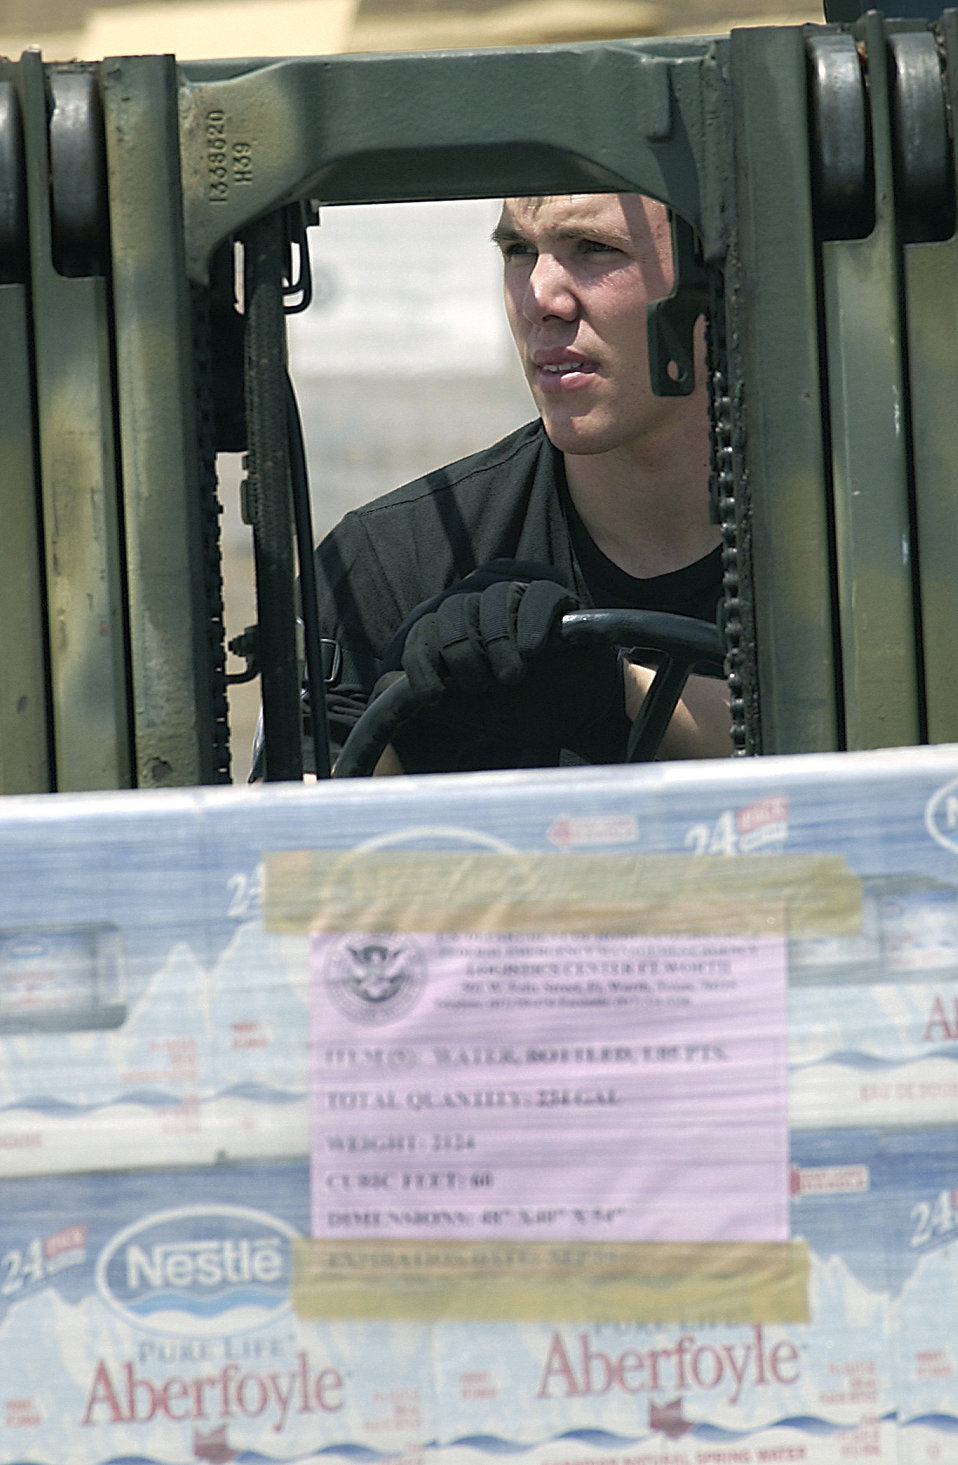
Hurricane Charley relief

DOBBINS AIR RESERVE BASE, Ga. -- An Airman from the 437th Airlift Squadron at Charleston Air Force Base, S.C., uses a forklift to move relief supplies on pallets here Aug. 14. The Airmen are supporting Hurricane Charley relief operations being conducted by the Federal Emergency Management Agency in Florida.